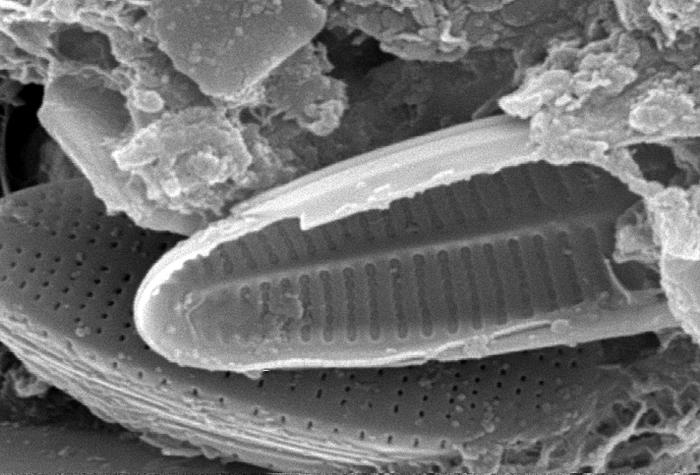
This scanning electron micrograph (SEM) of an untreated water specimen extracted from a wild stream mainly used to control flooding during inclement weather, revealed the presence of unidentified organisms, which included bacteria, protozoa, and algae. In this particular image, unidentified species of diatoms are seen to be caught up in an amorphous gelatinous biofilm, which had entrapped stream particulates as well.